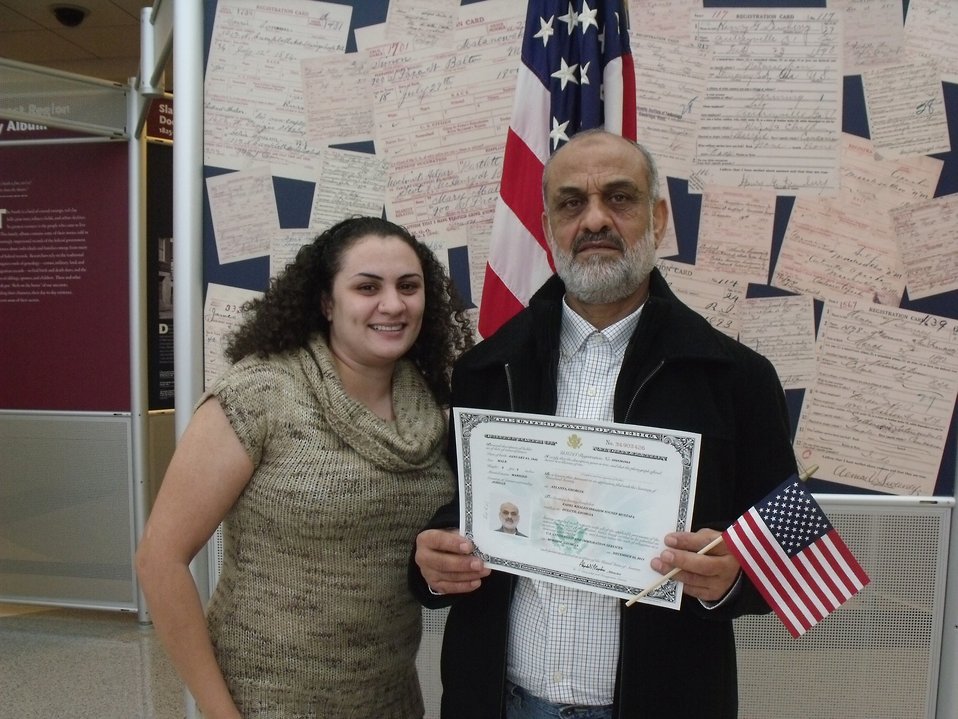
New Citizens